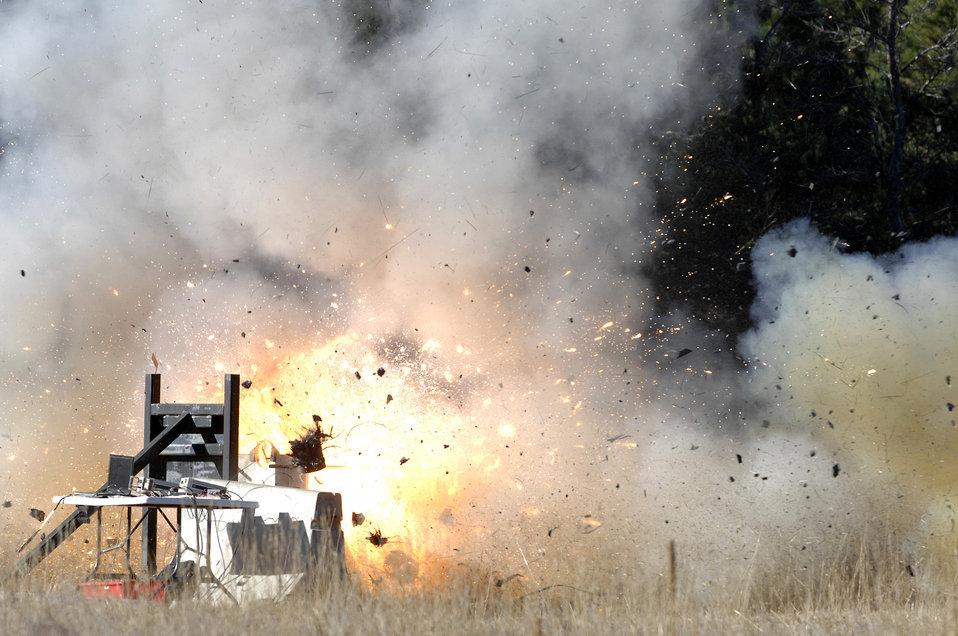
FalconLaunch 6 test-fire ends with a 'bang'

The FalconLaunch 6 rocket static test fire in Jacks Valley at the Air Force Academy, Colo., ended Nov. 4, 2009, as the rocket fired for a fraction of a second and then exploded. The purpose of the static test fire was to validate a new data acquisition system and perform further testing on an igniter design that was developed the previous academic year.